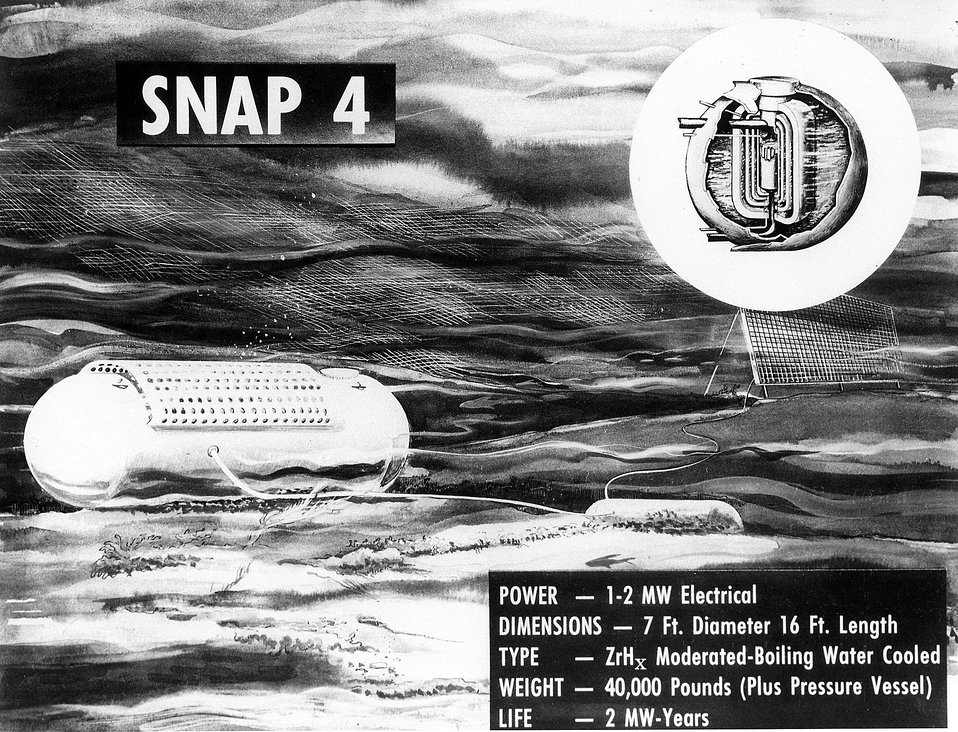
Drawing shows the SNAP-4 device which could be used for underwater devices requiring 1,000 to 4,000 kilowatts of electricity.